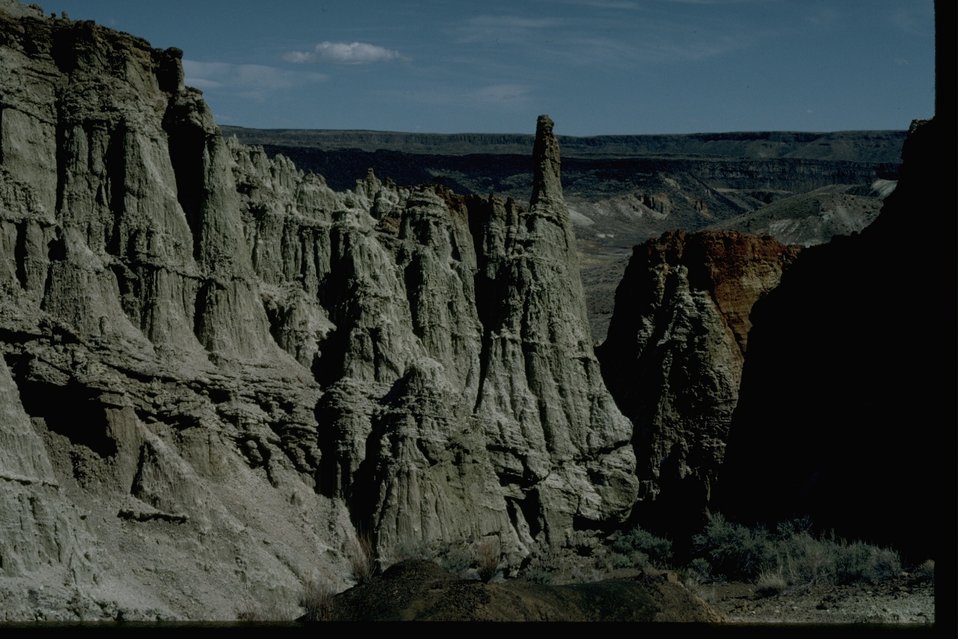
Chuck Basin in the Lower Owyhee Canyon Wilderness Study Area. OR 3-110.